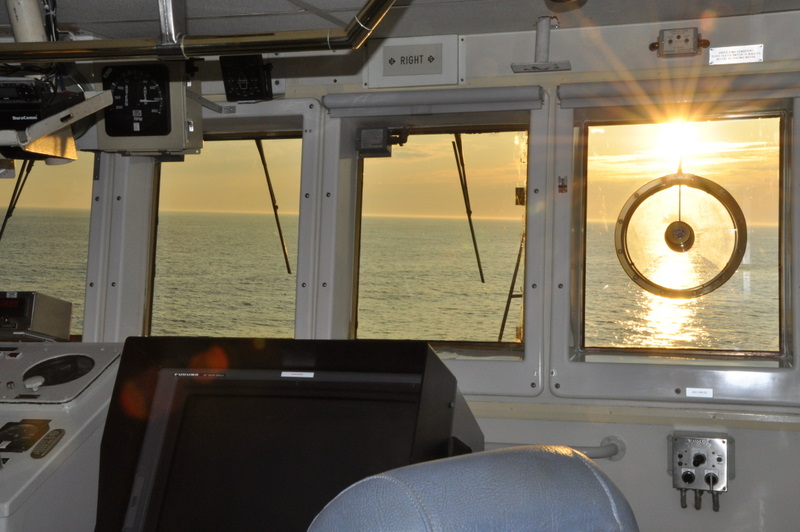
July 2009, Sunrise through the bridge